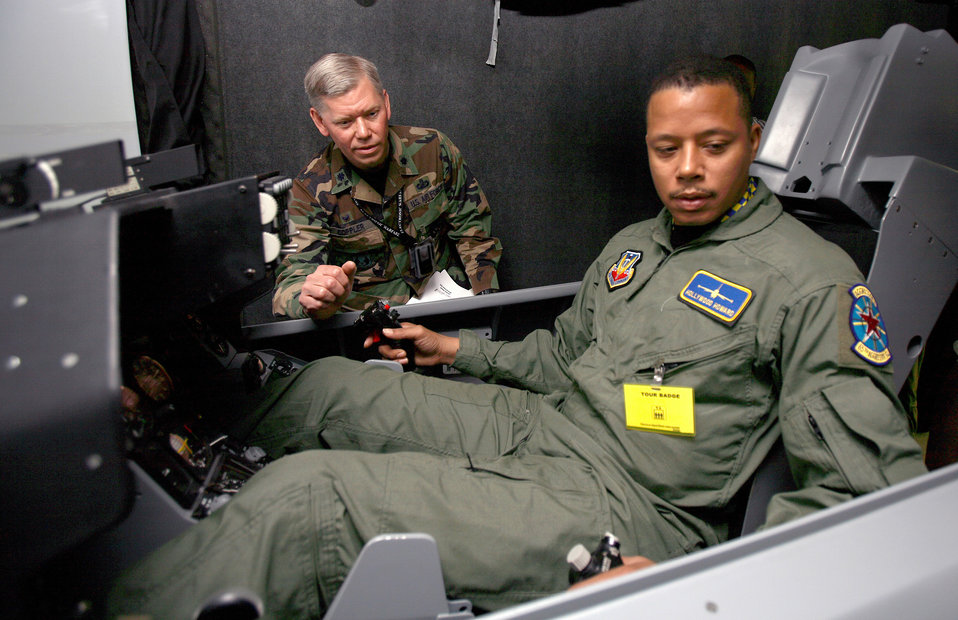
Movie makers team with military for realistic settings

Lt. Col. David Coppler instructs actor Terrence Howard on the controls of an F-16 Fighting Falcon simulator at Edwards Air Force Base, Calif., to help prepare Howard for his role in the movie,